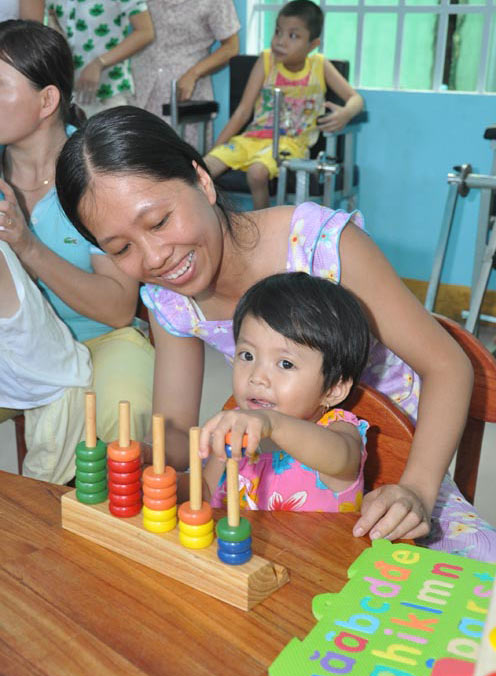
USAID-supported Hao Vang District Health Center, Danang

A mother and child make use of rehabilitation services in Danang.